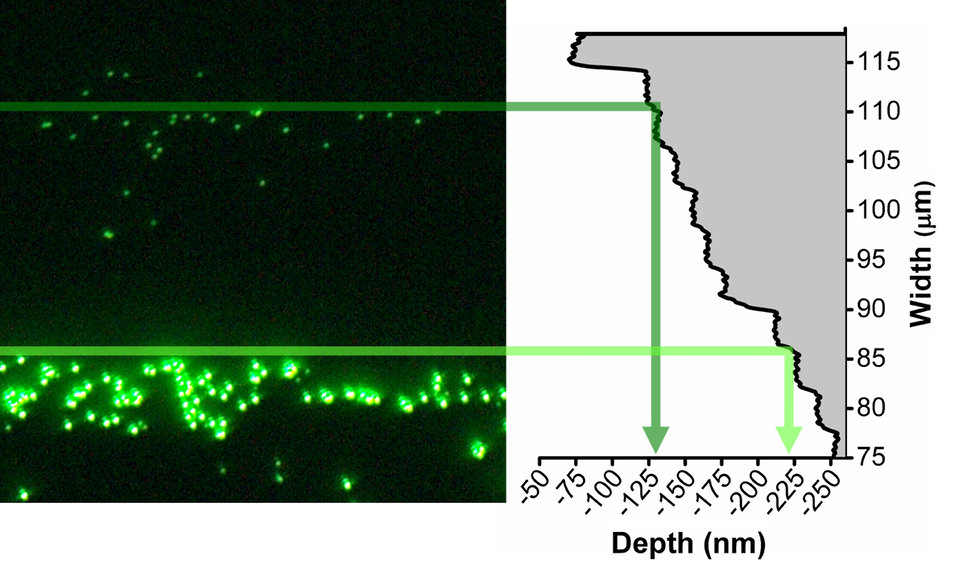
Microfluidics; Semiconductors

A 3D nanofluidic 'staircase' channel with many depths was used to separate and measure a mixture of different-sized fluorescent nanoparticles. Larger (brighter) and smaller (dimmer) particles were forced towards the shallow side of the channel (fluorescence micrograph on left). The particles stopped at the 'steps' of the staircase with depths that matched their sizes.